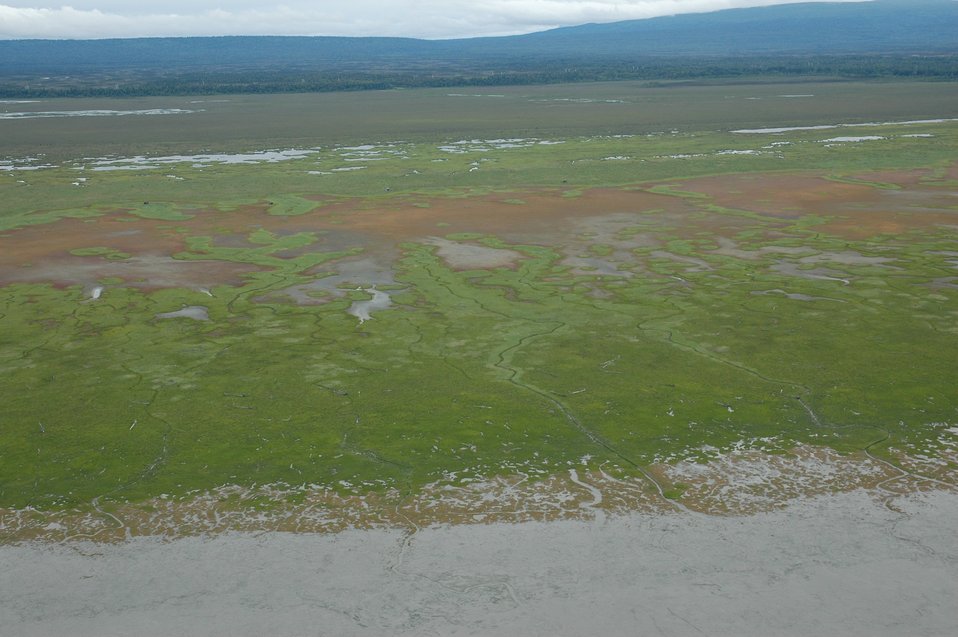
Aerial photograph. Tidal wetlands in the Susitna River Delta.